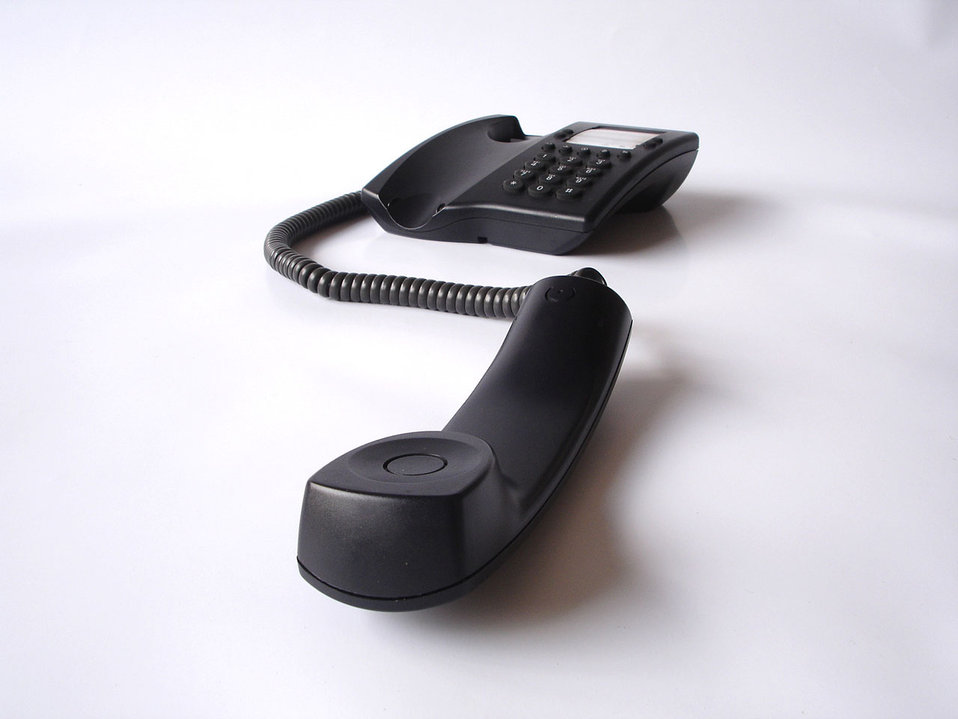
Call on phone.